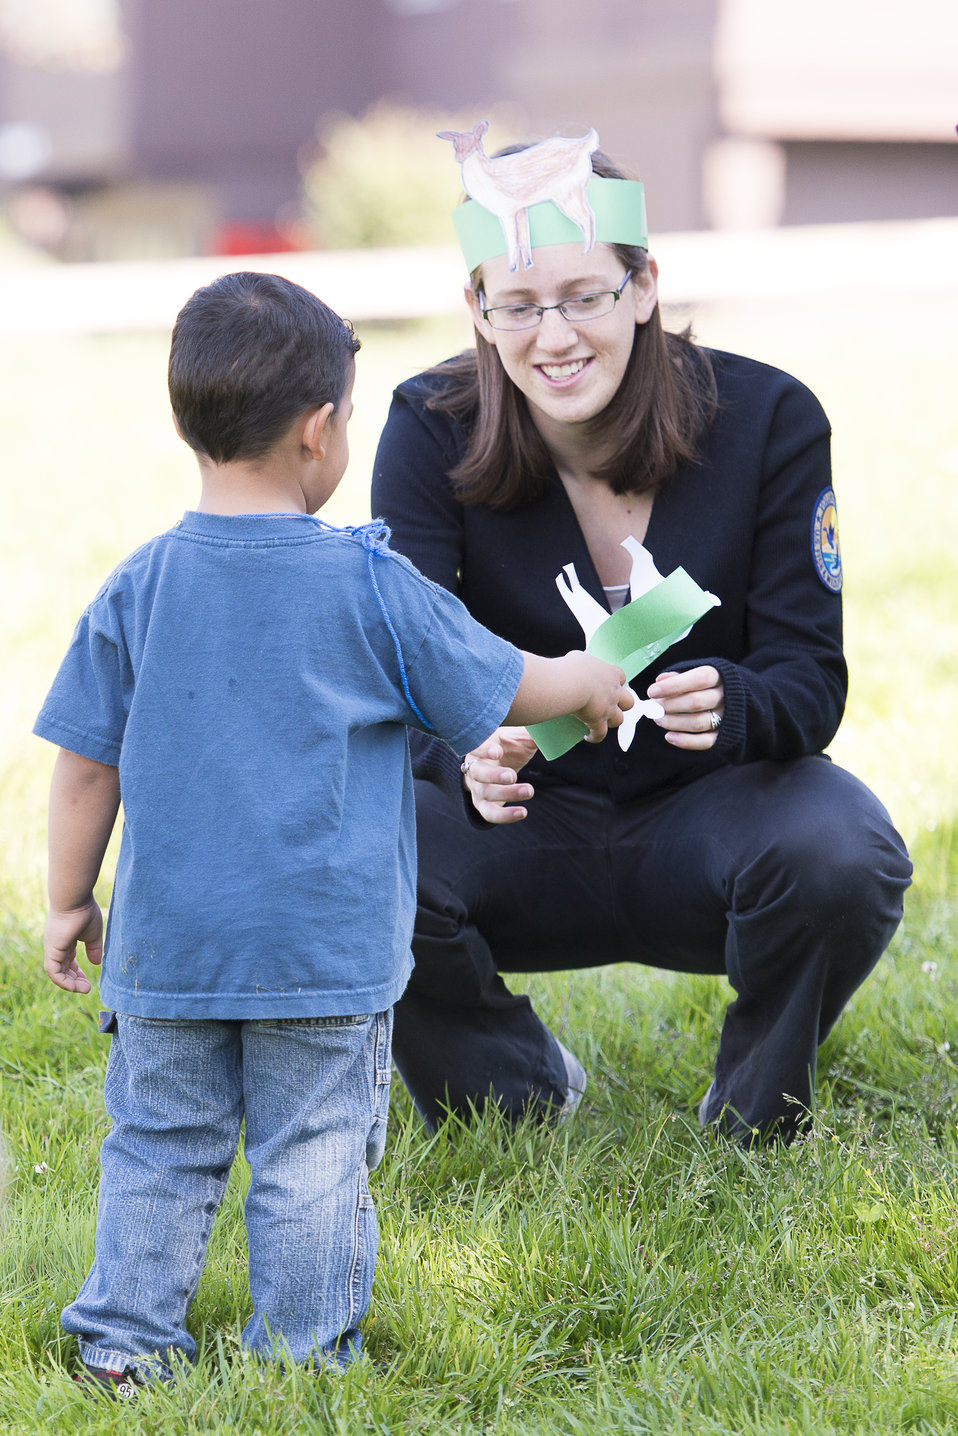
Dana Lindauer volunteers with FUN program

Photo Credit: Sylwia Ok/USFWS
Source: Kodiak NWR